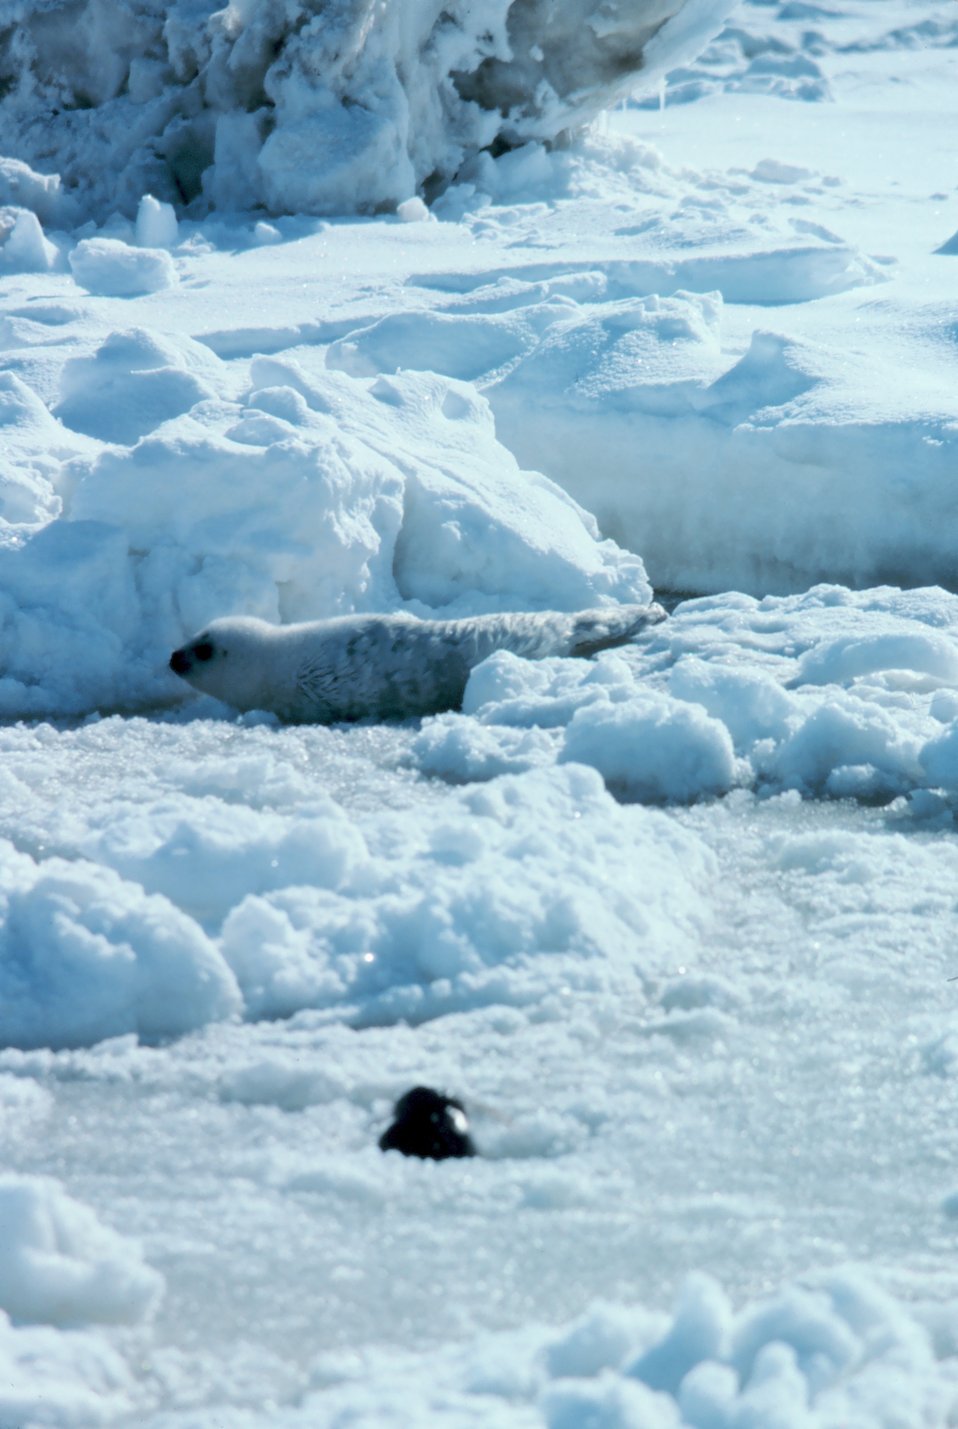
Spotted seal pup - Phoca largha.